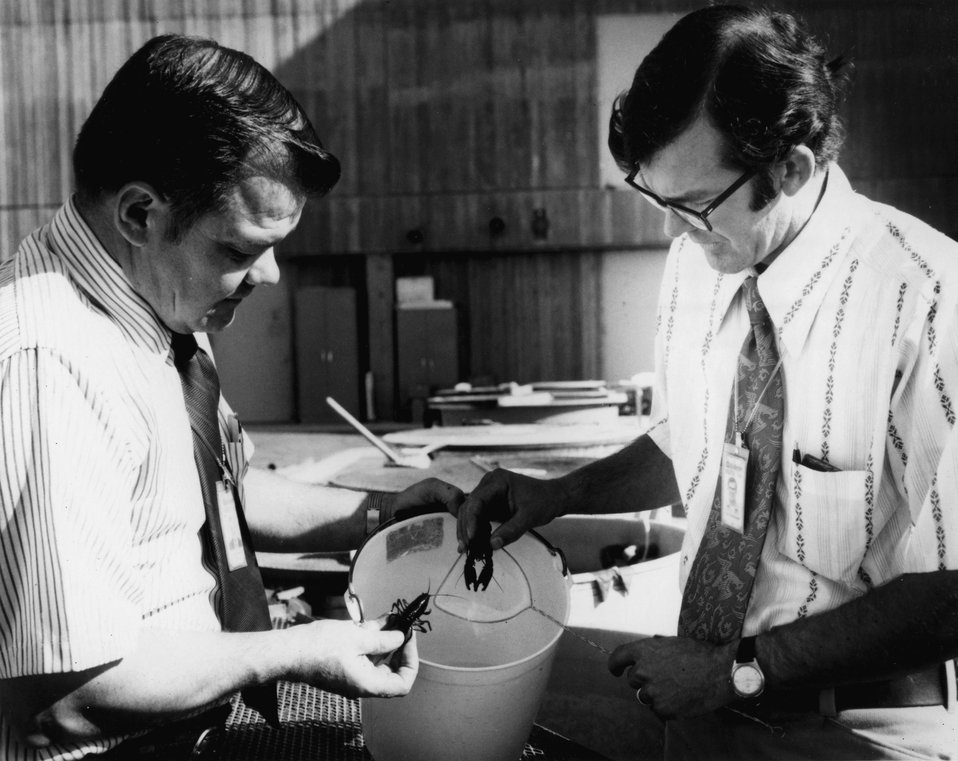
Crayfish were one of the water inhabitants studied by ecologists at the Pacific Northwest Laboratory. c. 1974